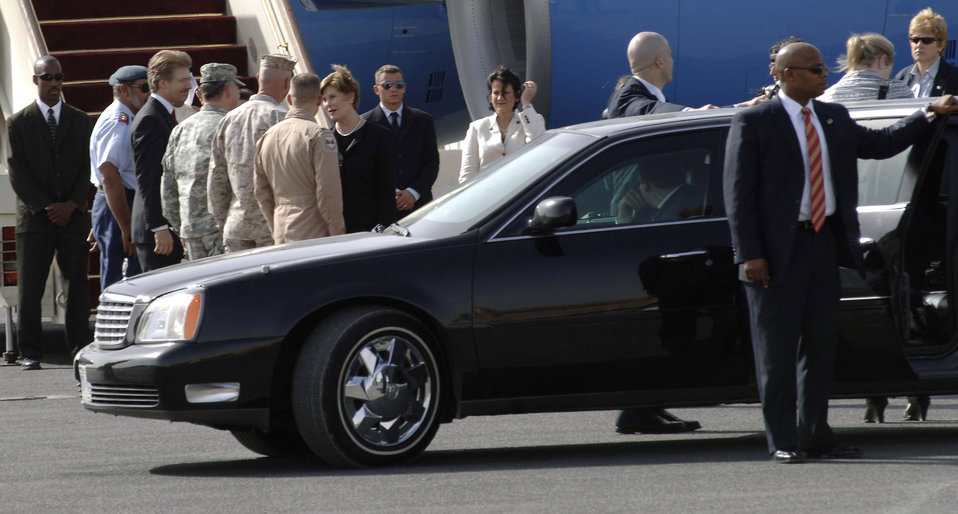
First lady visits Middle East

First Lady Laura Bush meets leaders of the host nation and commanders of the surrounding instillations Oct.24 at an undisclosed location in Southwest Asia. Mrs. Bush is touring the Middle East visiting American servicemembers. The first lady's visit highlights the accomplishments of the Middle East Partnership Initiative programs of the State Department, and also to visit a number of programs in countries that have launched the U.S. and Middle East partnership for breast cancer awareness and research.